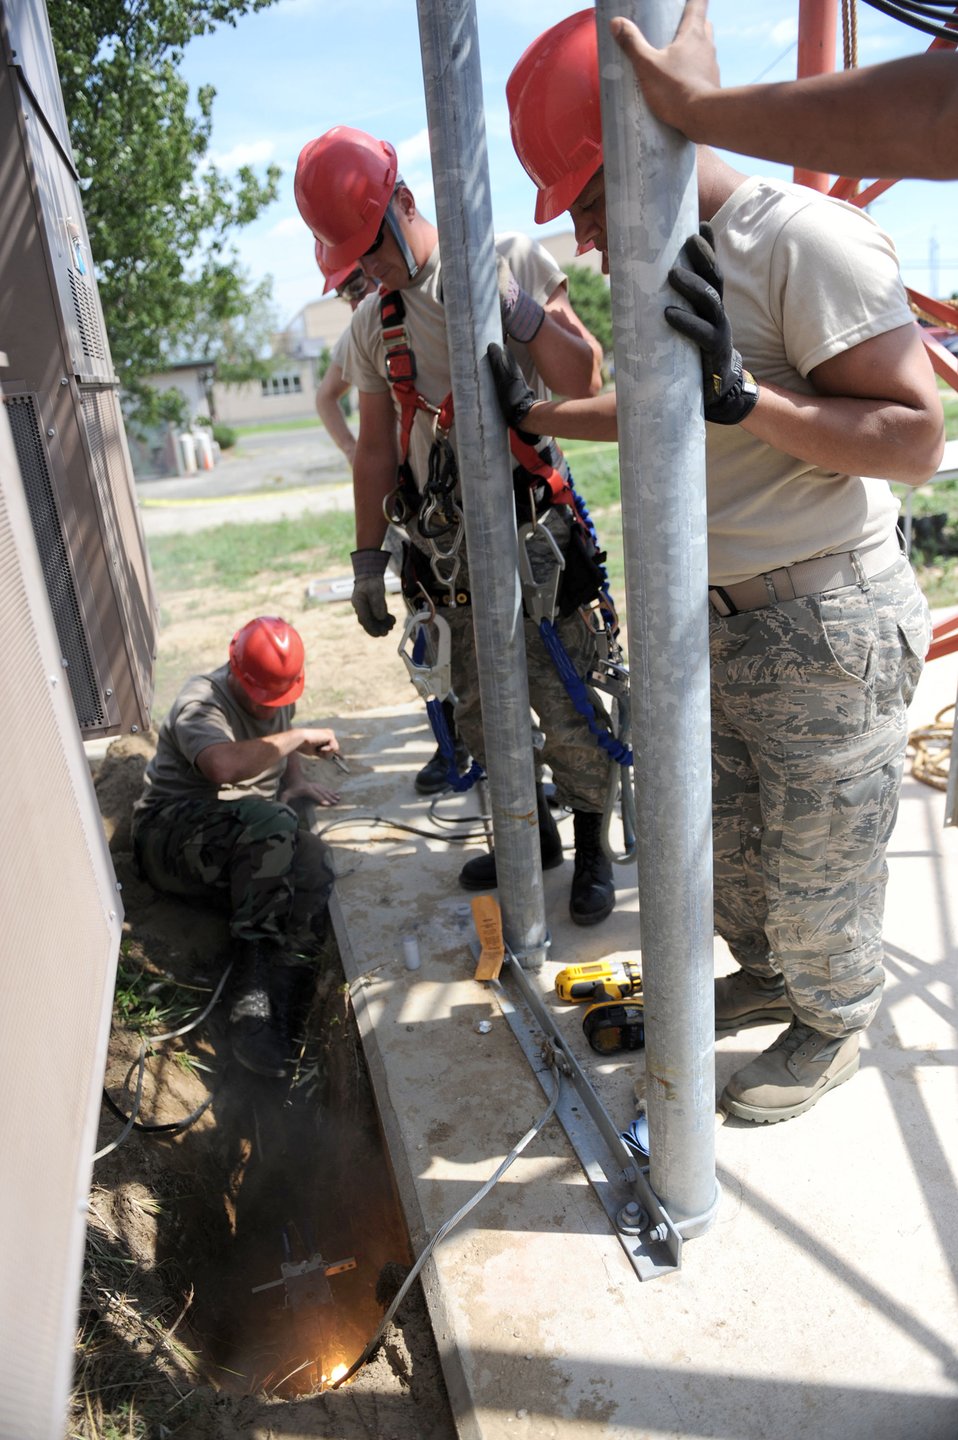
Upgrading communications tower

Airmen from the 213th Engineering Installation Squadron check the wires July 22, 2010, at a communications tower at F.S. Gabreski Air National Guard Base in Westhampton Beach, N.Y. They are from nearby Stewart ANGB at Newburgh.